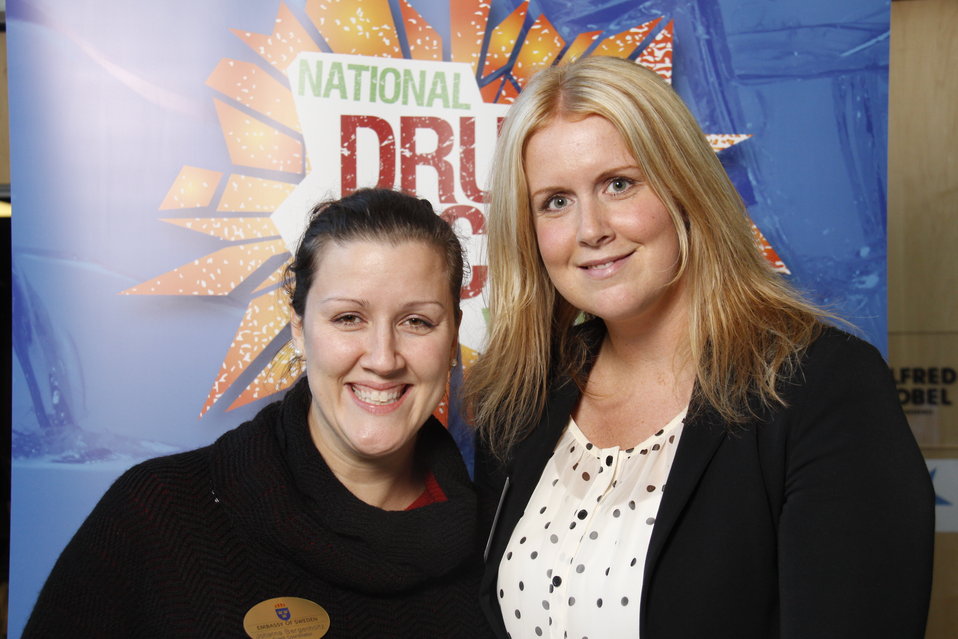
NDFW Mentor Event